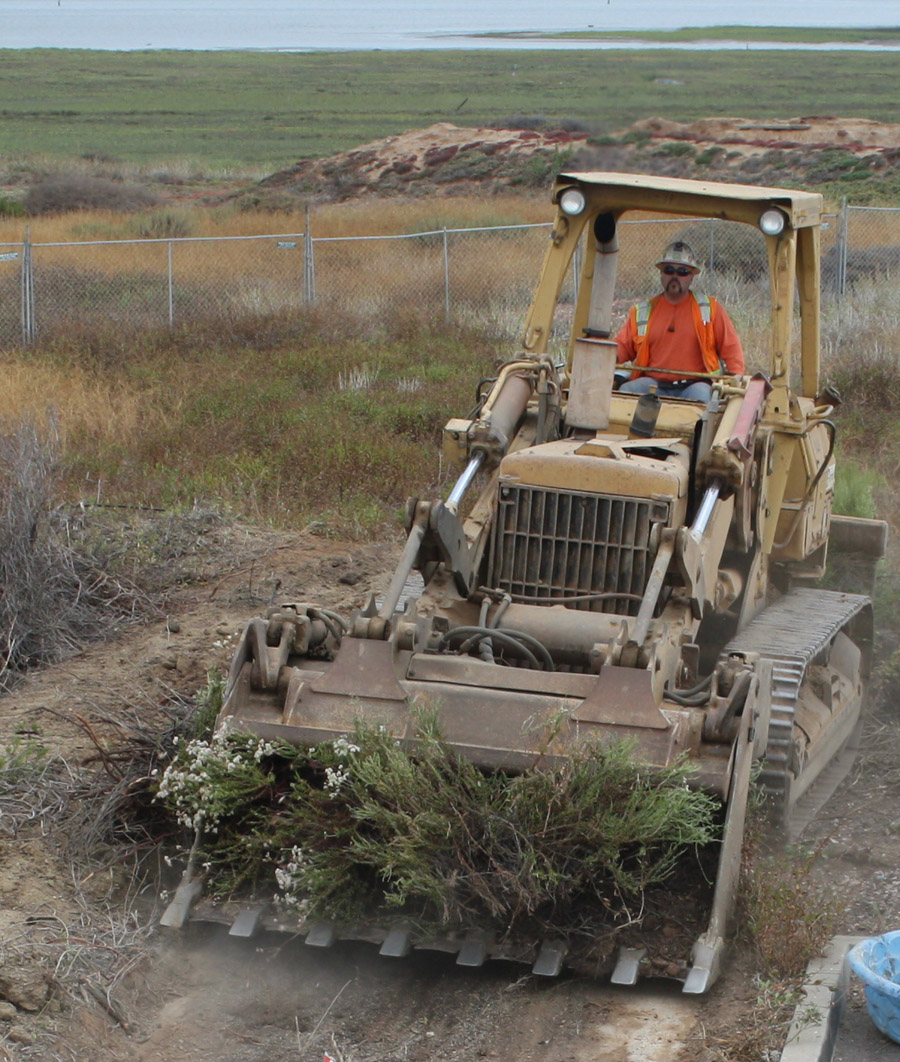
Clearing the way on the San Diego National Wildlife Refuge

The San Diego National Wildlife Refuge received 3 ARRA grants. One to build an energy efficient headquartres and visitor center, a second one to replace 2 miles of boundary fencing, and a third to repair drainage channels parallel to Milar Ranch Road.